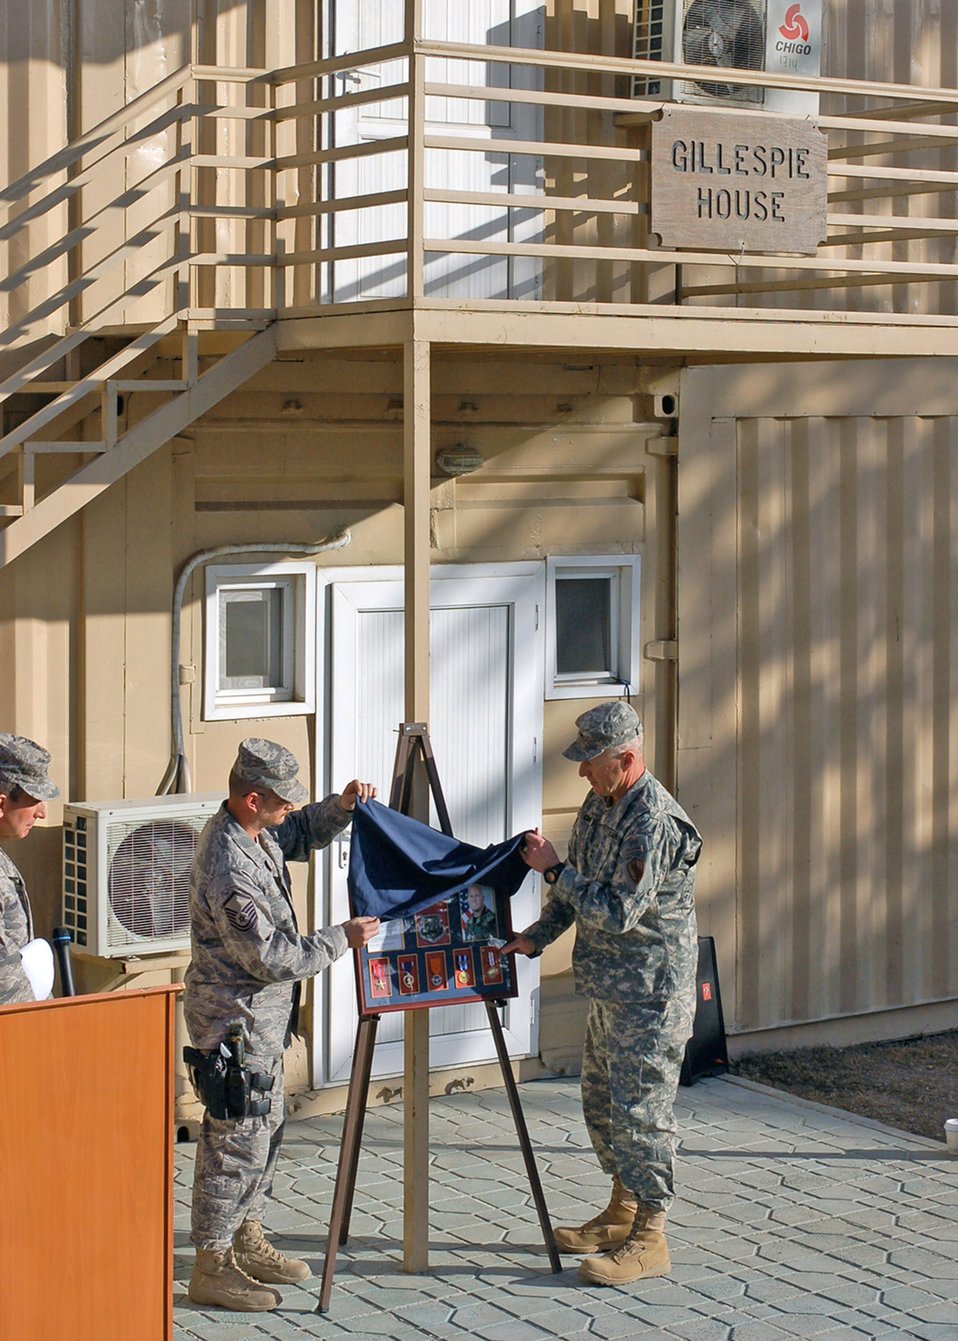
Camp Eggers officials dedicate building to fallen Airman

Master Sgt. Josh Crump (left) and Army Maj. Gen. Robert Cone unveil a plaque during a memorial dedication to a fallen Airman March 2 at Camp Eggers, Afghanistan. Master Sgt. Randy Gillespie was killed in action in July 2007 while serving as an embedded training team senior mentor with the Afghan national army 207th Corps in Herat. General Cone is the Combined Security Transition Command-Afghanistan commanding general.